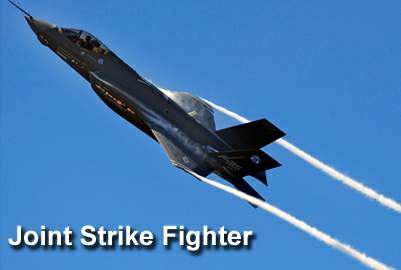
Air Force officals announce criteria for basing of joint strike fighter

Air Force officials released Sept. 17 their basing criteria that will be used to determine the future basing of joint strike fighters. The basing criteria were approved by the Secretary and Chief of Staff of the Air Force. The basing criteria are airspace, flight training ranges, weather, support facilities, runways, taxi ramps, environmental concerns and cost factors.